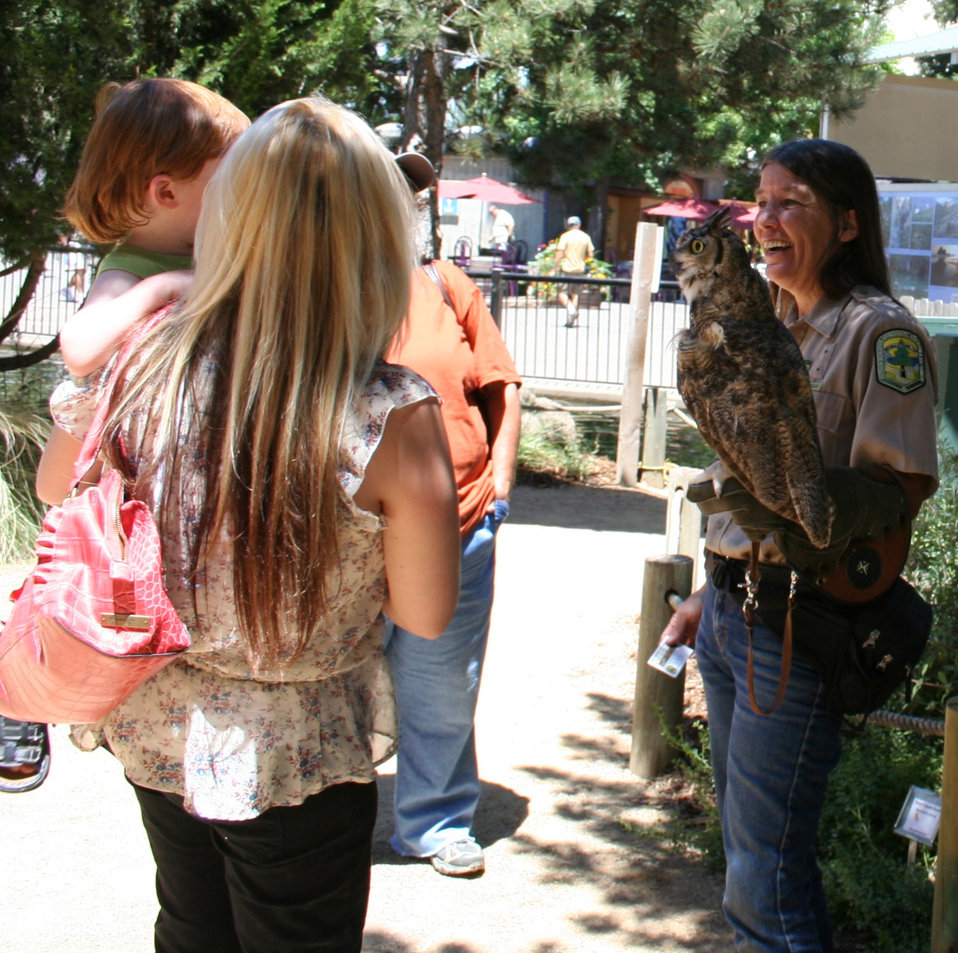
Effie Yeaw joined DOI at the California State Fair

For the first time DOI agencies [US Fish and Wildlife Service, Bureau of Reclamation and Bureau of Land Management] joined together to host an America's Great Outdoors Booth at the California State Fair in Sacramento, Calif., July 14 - 31.

The booth included informational panels and displays as well as a children's activity area. Activities: wildlife masks, temporary tattoos, water-cycle bracelets, fish prints, touch boxes, scat bingo, a green-screen, coloring and bird bingo. Five days a week live raptors, snakes and bats were brought in.

About 50,000 children visitied the booth during the 18-day fair.